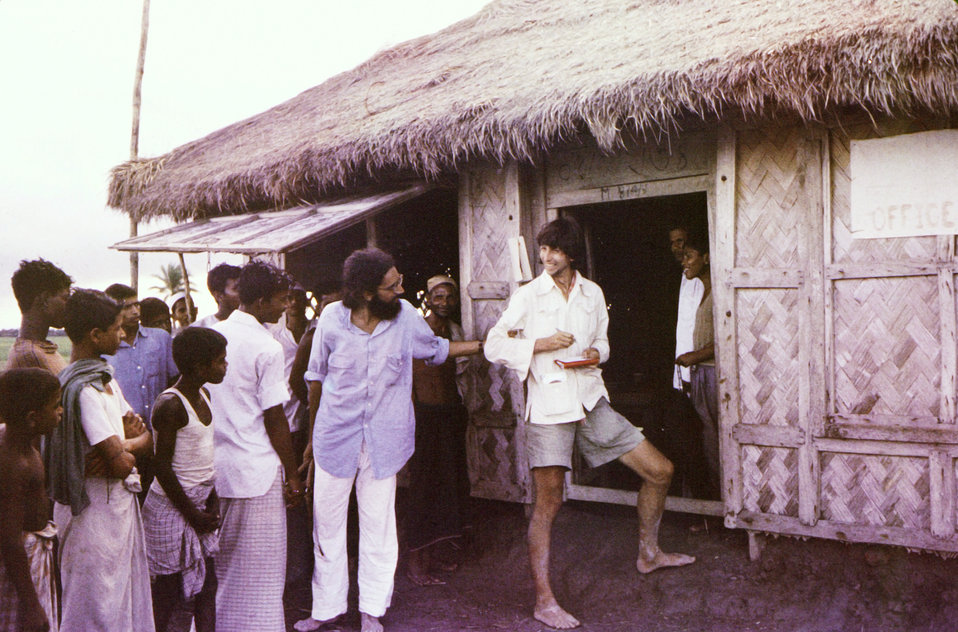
This image, captured September, 1975, depicted the Dr. Jason Weisfeld (U.S.A.), wearing a blue shirt, and wearing shorts, was Swedish-based Dr. Harald Heijbel, standing in front of the Smallpox Office and residence at the Lord Hardinge Bazaar, a Bhola Island marketplace, which at the time, was open for business twice a week.